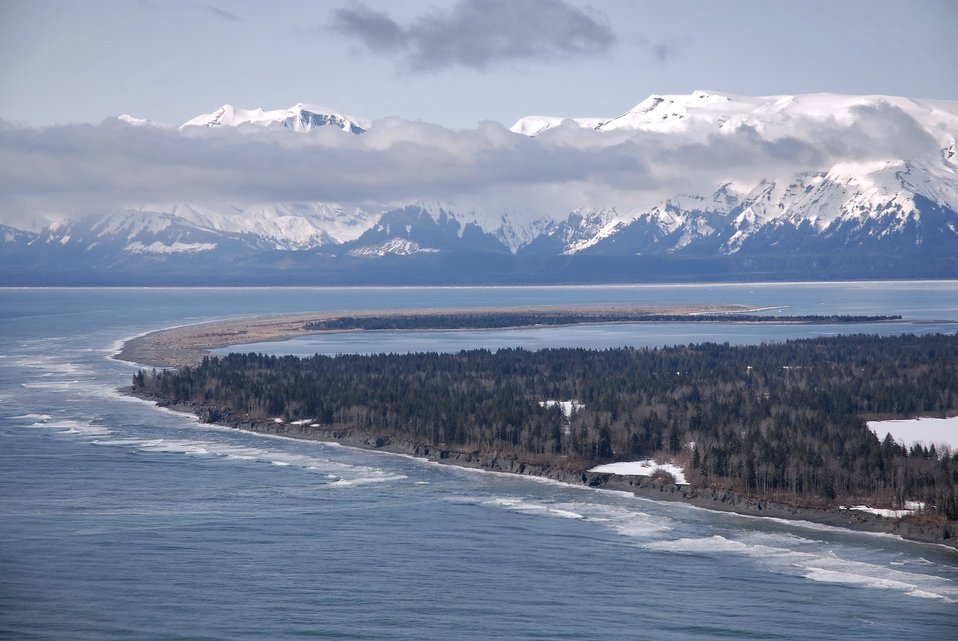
An aerial view of the south entrance to Icy Bay showing the great sandspit and the endless surf of the Gulf of Alaska.